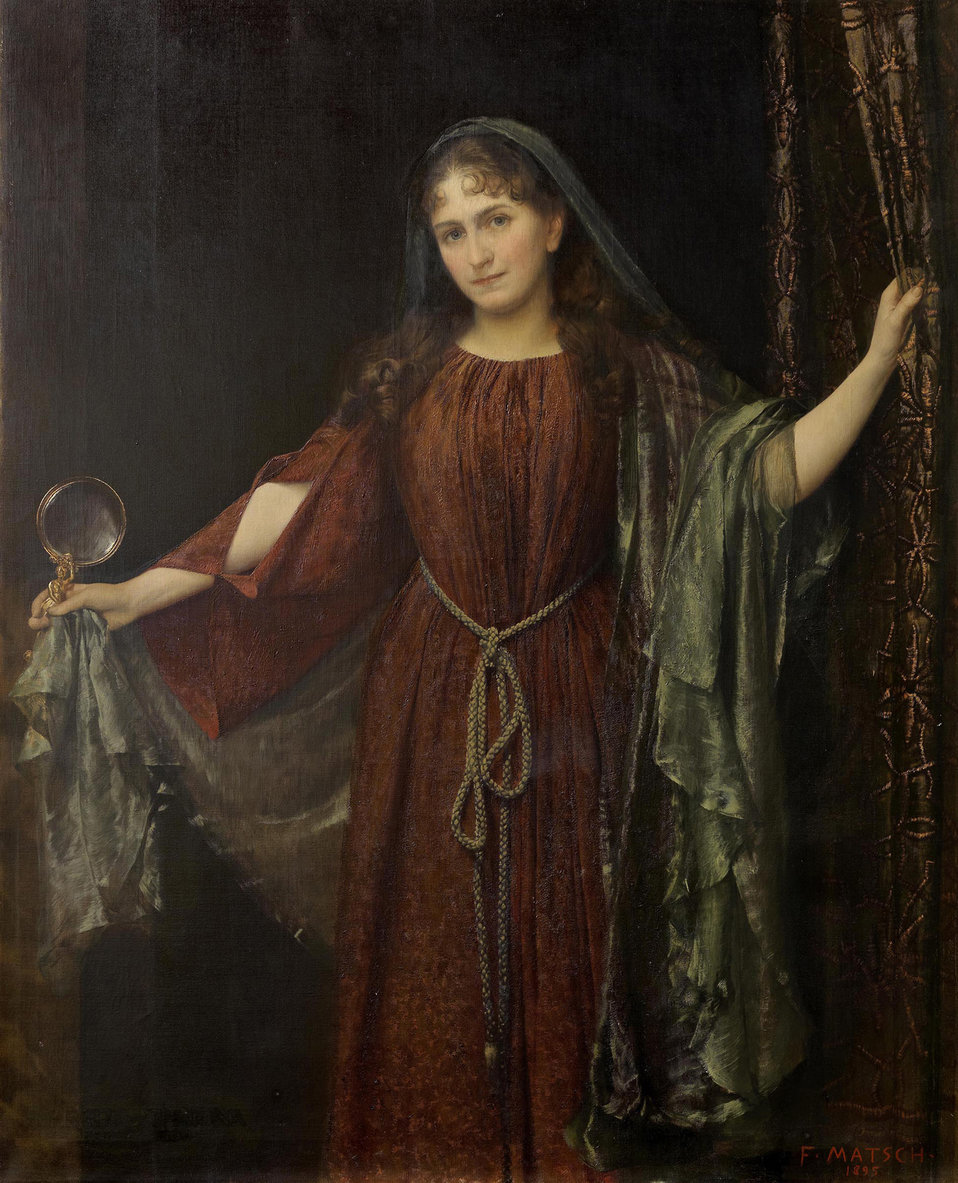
Katharina Schratt als 'Frau Wahrheit', 1895; Gemälde im Besitz des Burgtheaters